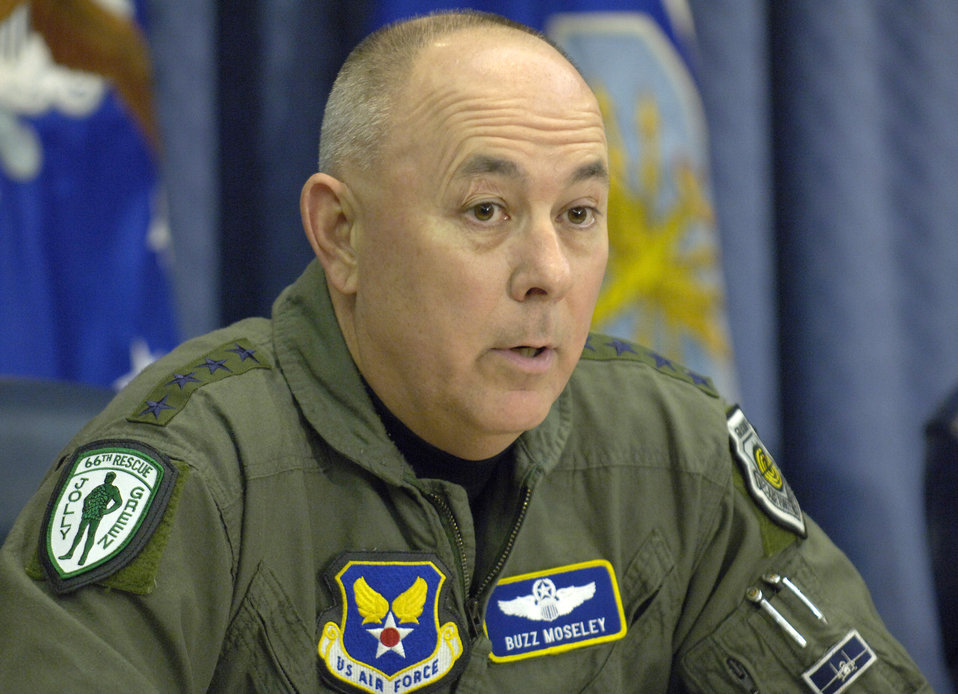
Air Force Chief of Staff Gen. T. Michael Moseley gathered more than 600 of his senior military and civilian leaders in St. Louis Aug. 24 for a